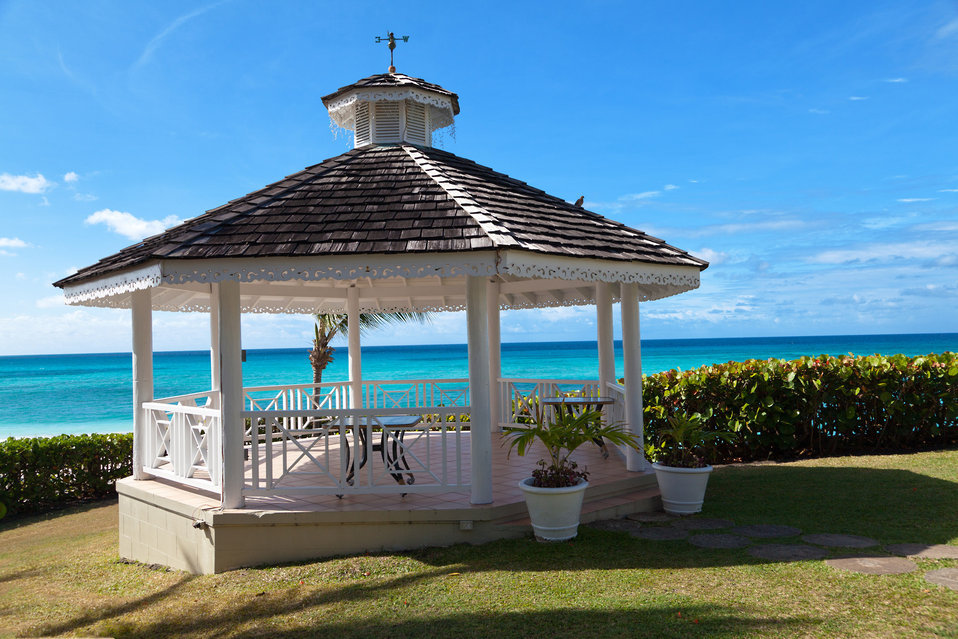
Wedding gazebo by the sea.